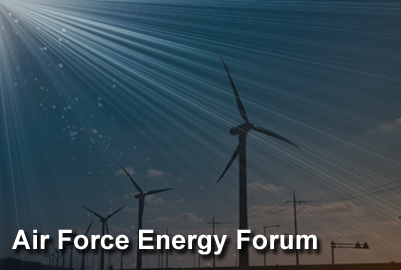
Air Force Energy Forum